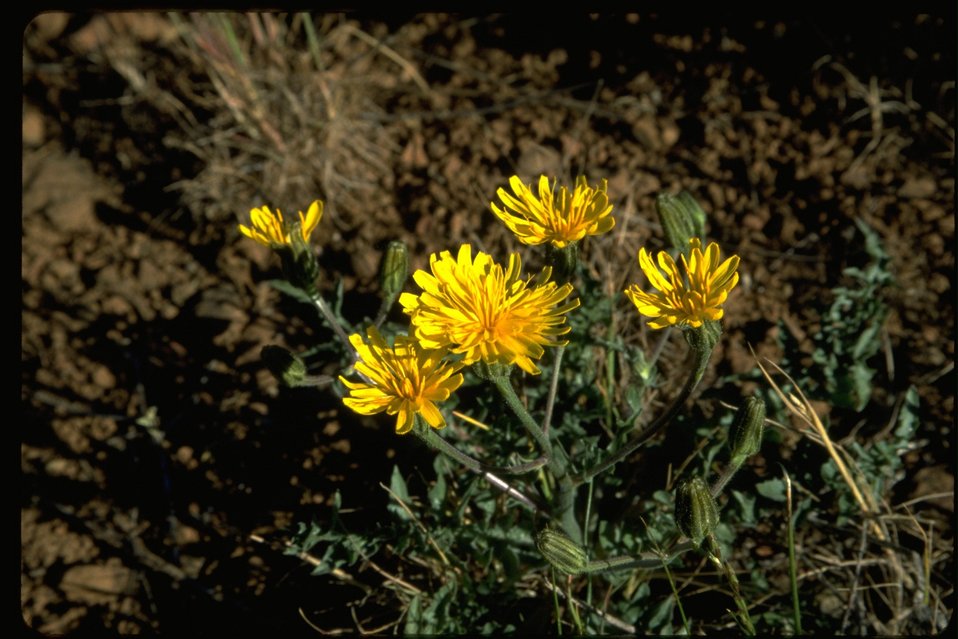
Medium shot of wild Dandelion.